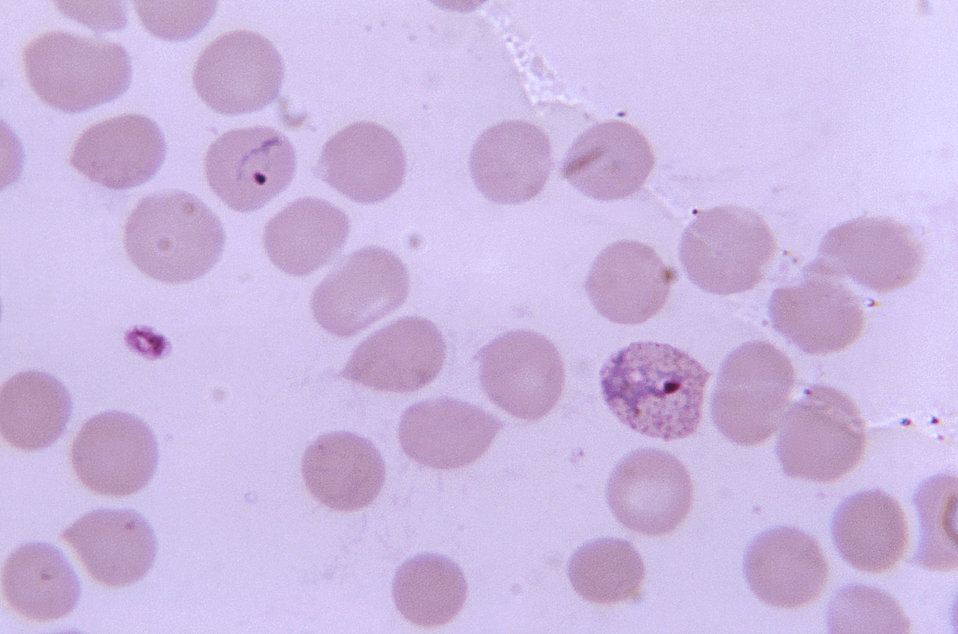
Magnified 1125X, this thin film photomicrograph of a blood smear, revealed the presence of a ring-form Plasmodium vivax trophozoite (upper left), and a growing amoeboid trophozoite displaying intracytoplasmic Sch�'s dots (right).